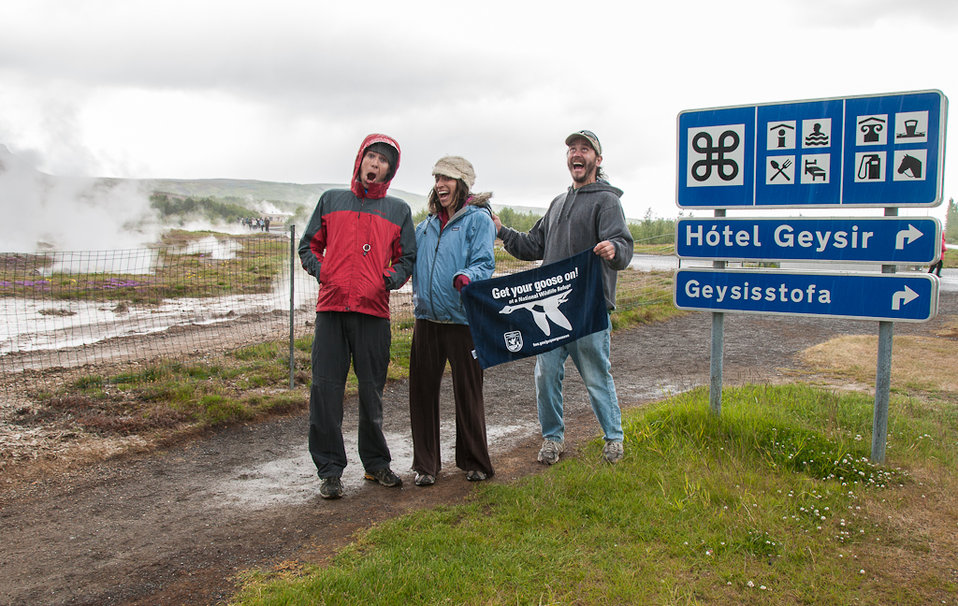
GYGO! in Iceland!